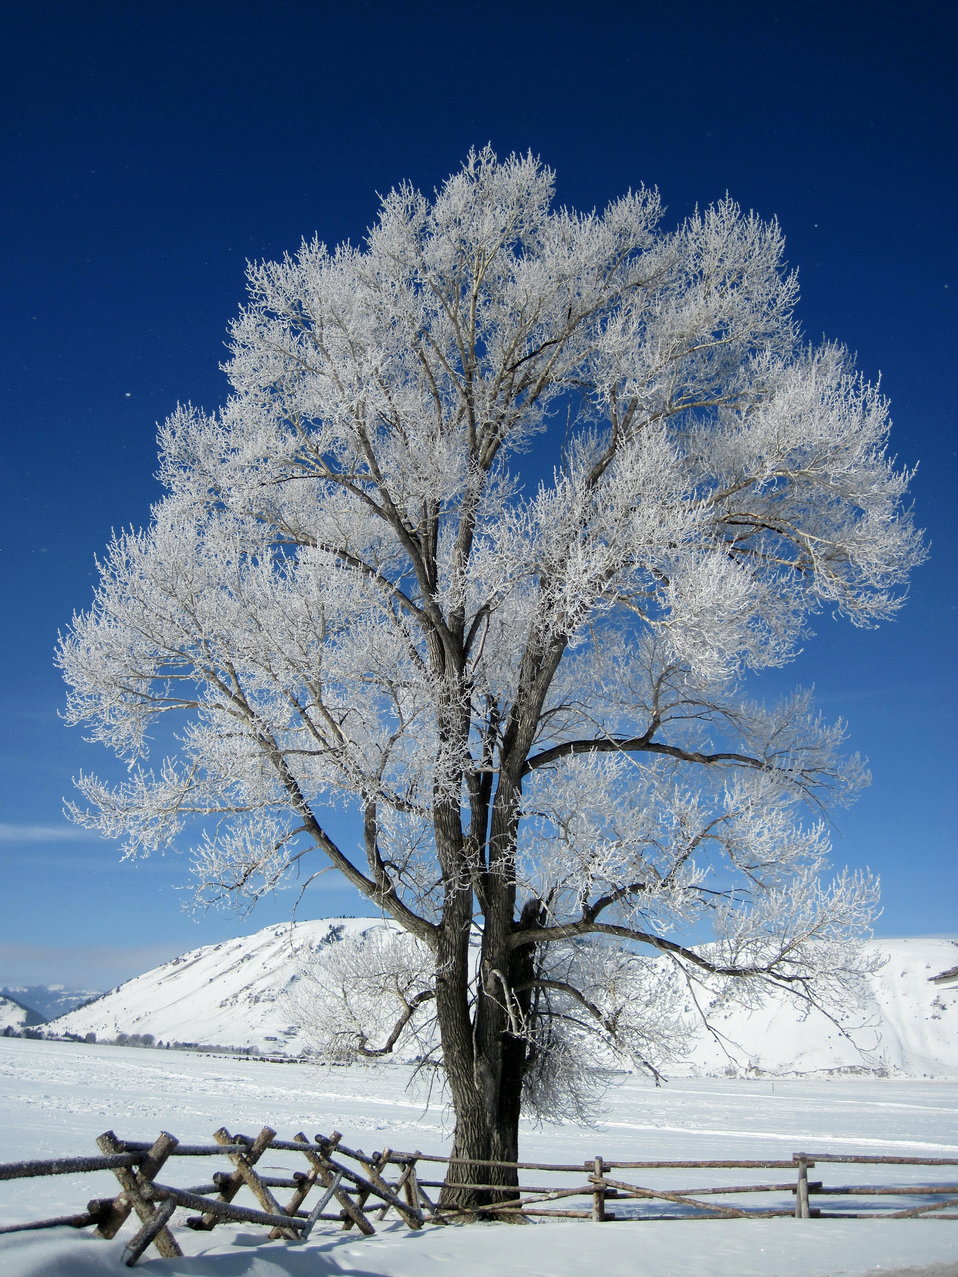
Frost on the Cottonwood

Frost lingers on a large cottonwood tree near the historic Miller House on a blue sky morning.